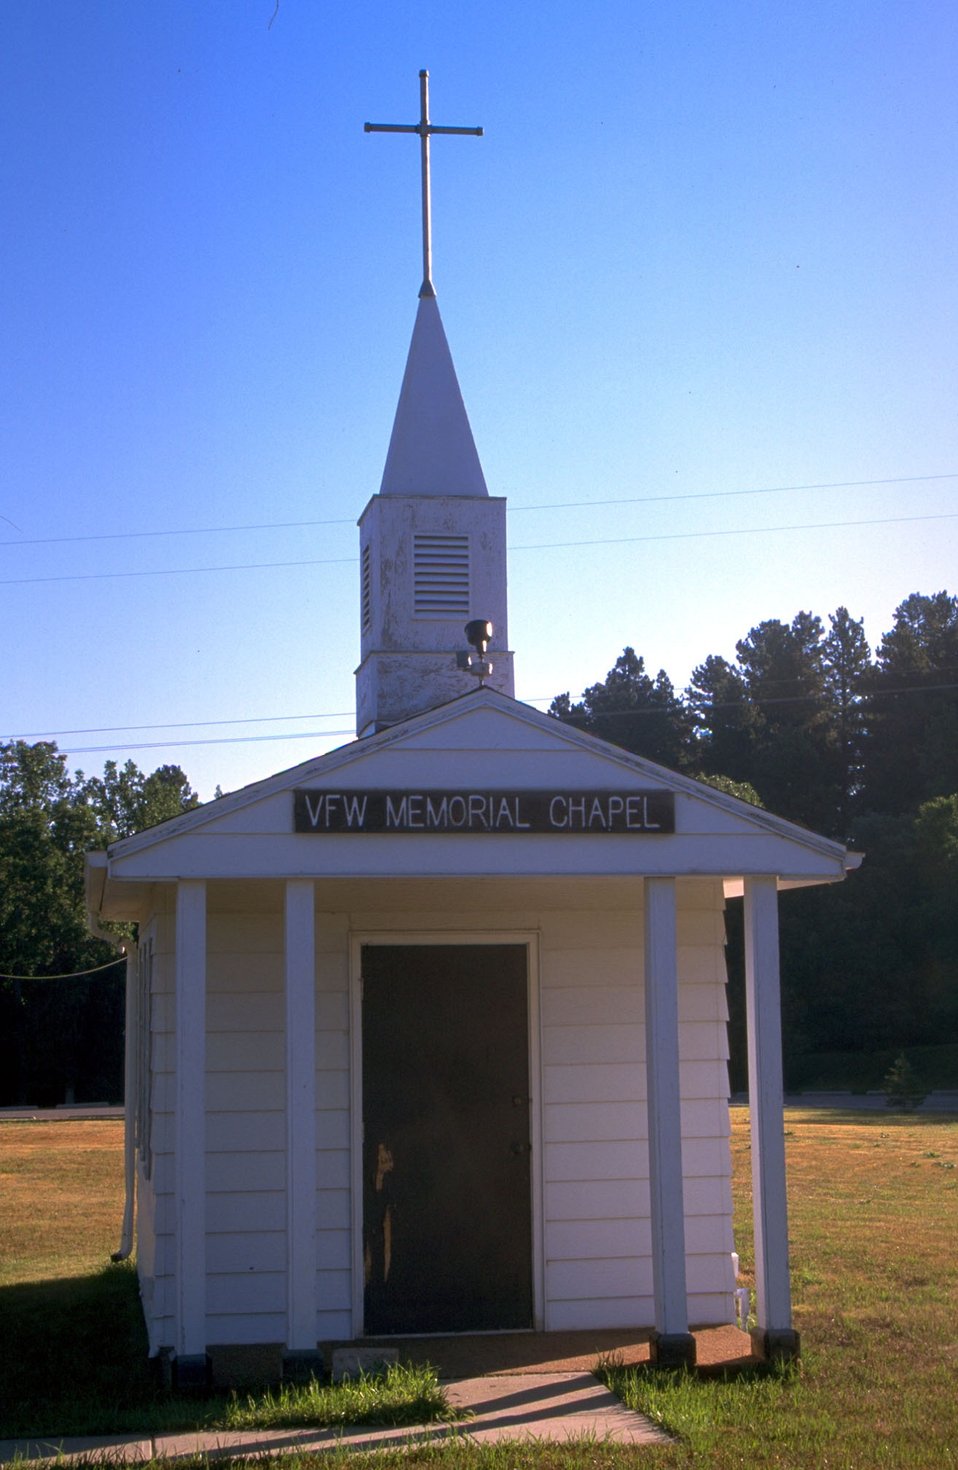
Veterans of Foreign Wars (VFW) Memorial Chapel